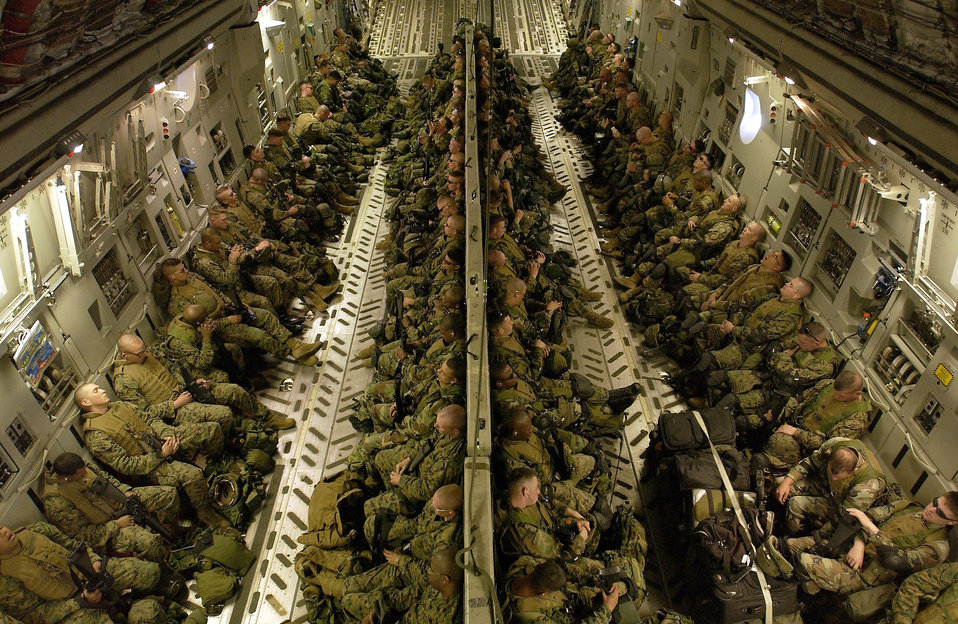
Helping Haiti

PORT-AU-PRINCE, Haiti -- Marines from Camp Lejeune, N.C., rest onboard a C-17 Globemaster III before landing here March 3.